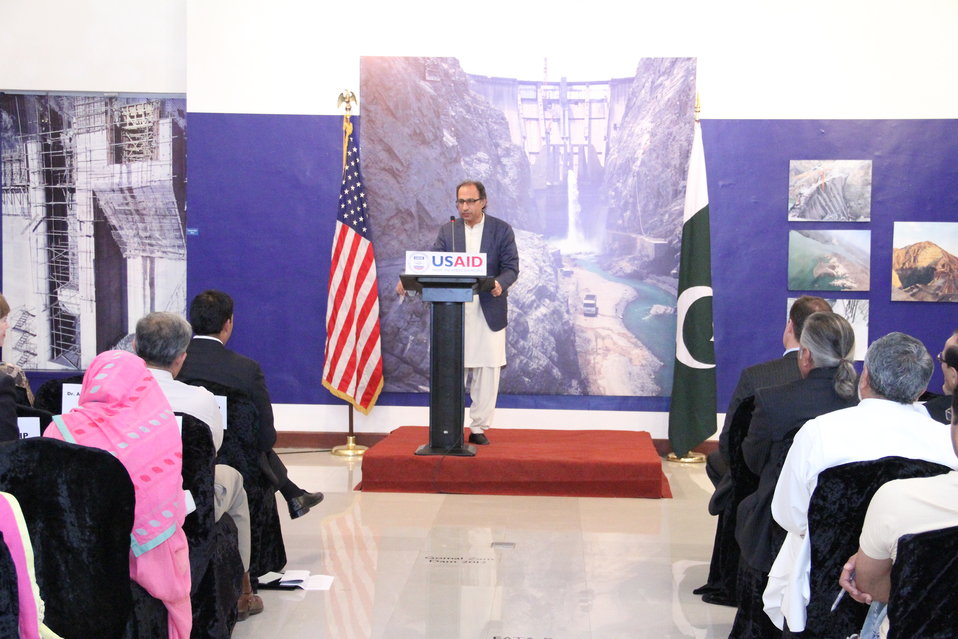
Photo Exhibition Celebrate US-PAK Cooperation at PNCA, Islamabad on April 13, 2012

Dr. Abdul Hafeez Sheikh, Federal Minister for Finance Address the Participants & media